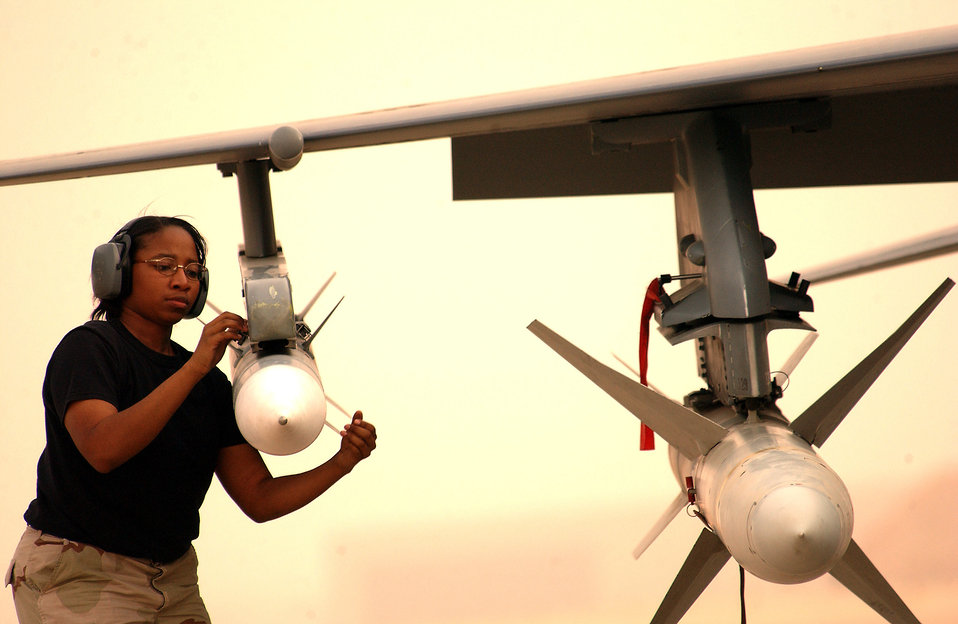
Herring

OPERATION IRAQI FREEDOM -- Senior Airman Kimberly Herring, a weapons loader assigned to the 363rd Expeditionary Maintenance Squadron, pulls weapon pins off an F-16 Fighting Falcon prior to its takeoff for a mission at a forward-deployed location in Southwest Asia on March 27. Herring is deployed from the 77th Fighter Squadron, Shaw Air Force Base, S.C.